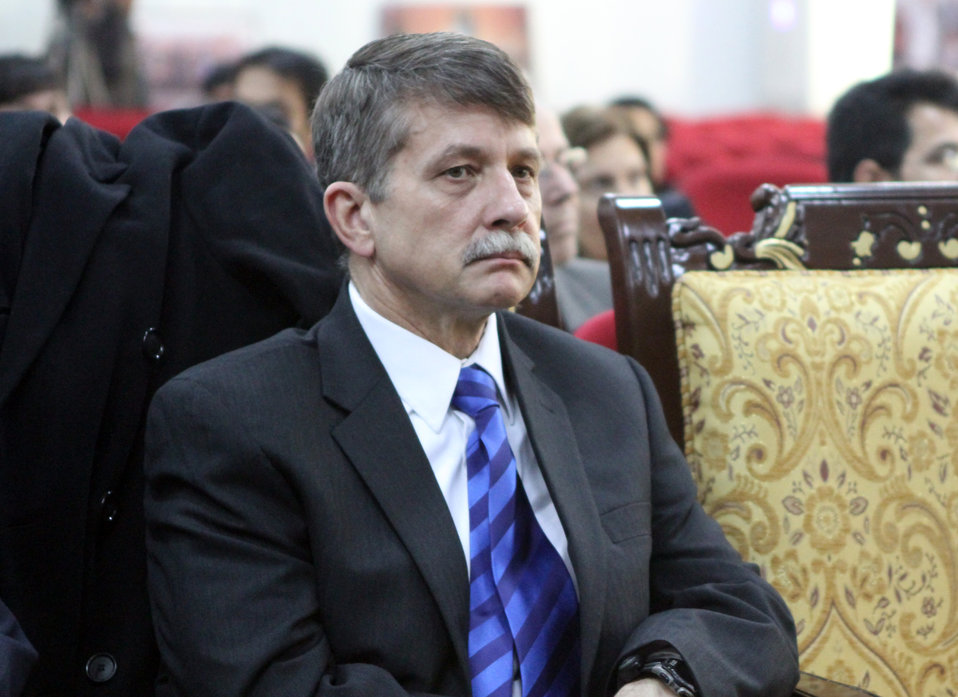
Afghanistan Final National Round of the 2013 Philip C.Jessup International Law Moot Court Competition